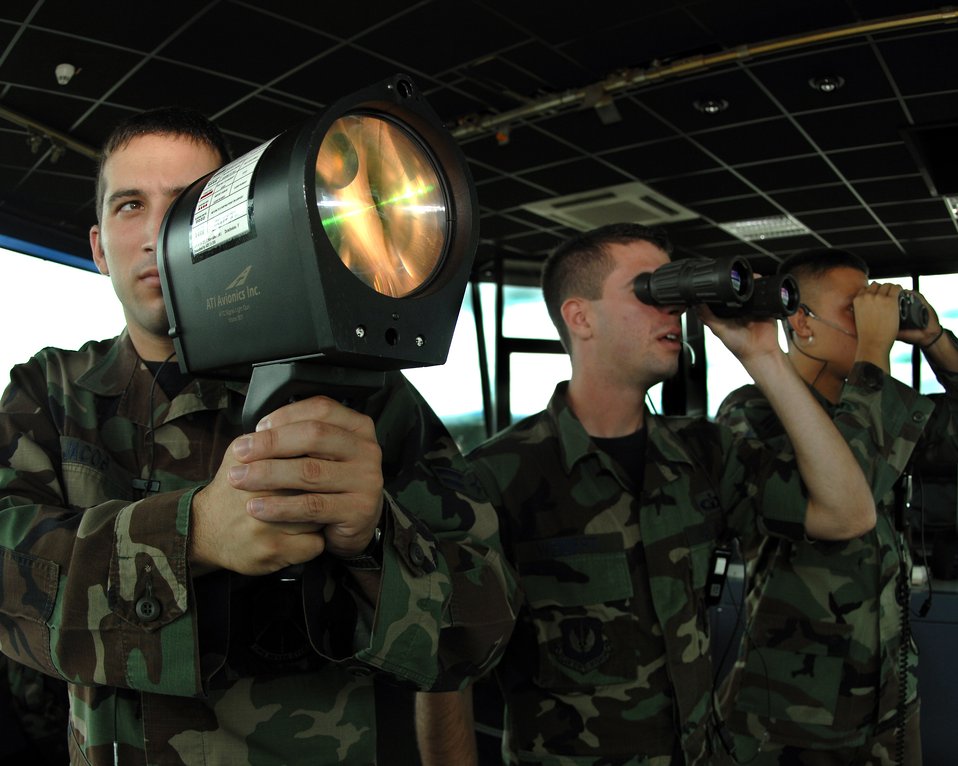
Guidance from above

Airman 1st Class Toby Jacob (left to right), Staff Sgt. Mark Weidert and Airman 1st Class Earl Pruett guide inbound aircraft to a safe landing using a light gun June 25 from the control tower at Ramstein Air Base, Germany. The light gun is a vital tool during inclement weather and sometimes is the only way aircraft reach the ground safely. The Airmen are assigned to the 86th Operations Support Squadron.